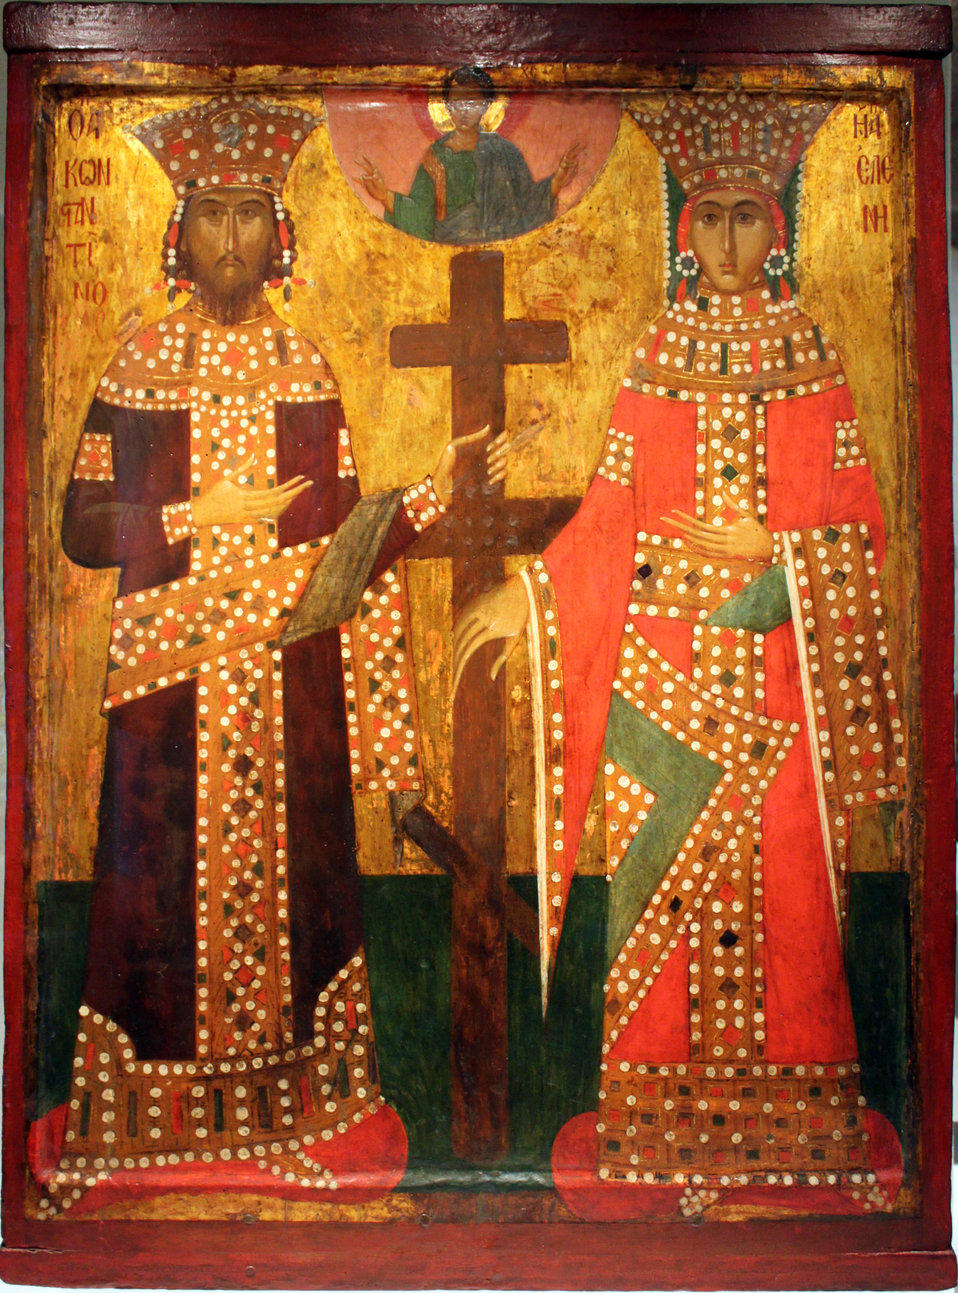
1478 Kaiser Konstantin und Kaiserin Helena anagoria